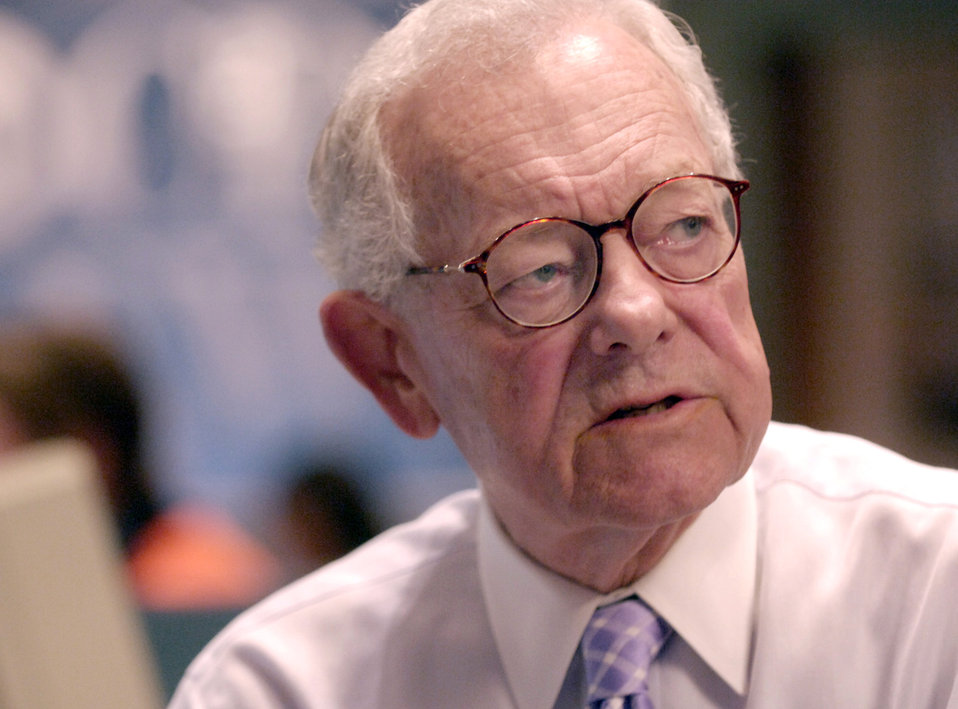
CBS news anchor proud of Air Force past

Bob Schieffer, chief Washington correspondent for